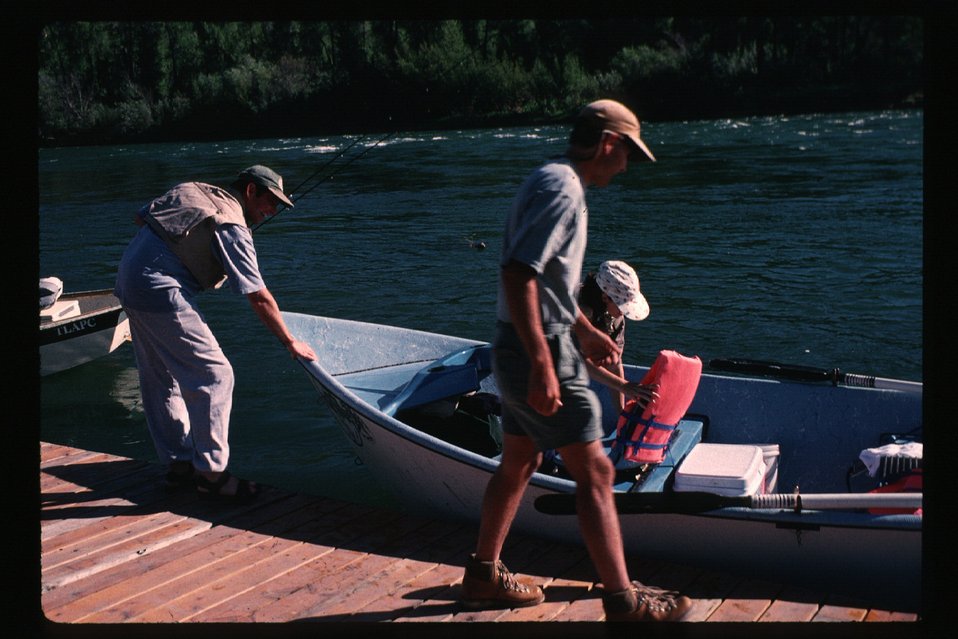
Fishing South Fork of Snake River Idaho Falls Field Office USRD Upper Snake River District